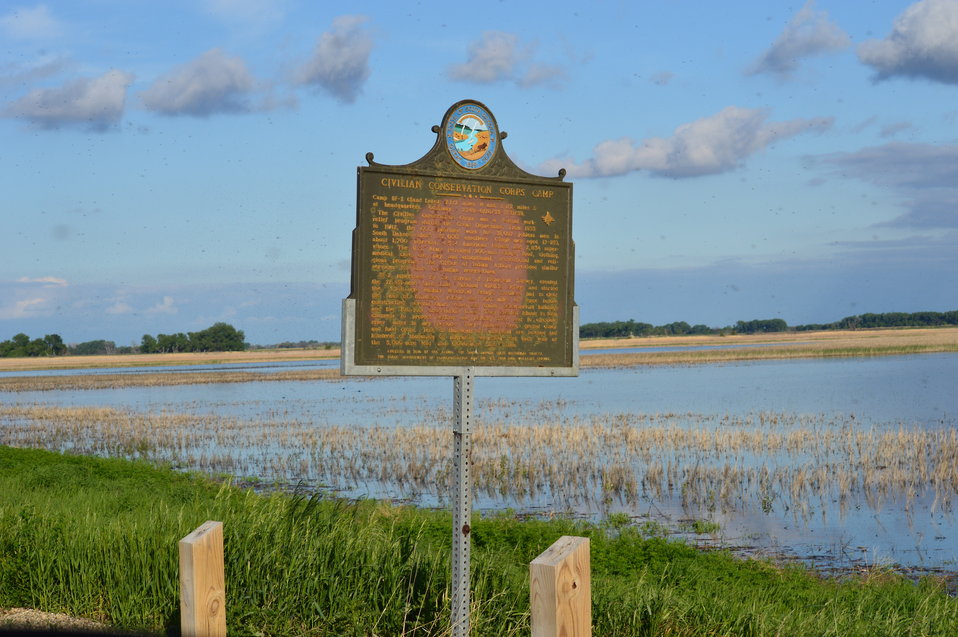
Historic Landmark

Civilian Conservation Corps historic sign at Sand Lake National Wildlife Refuge.